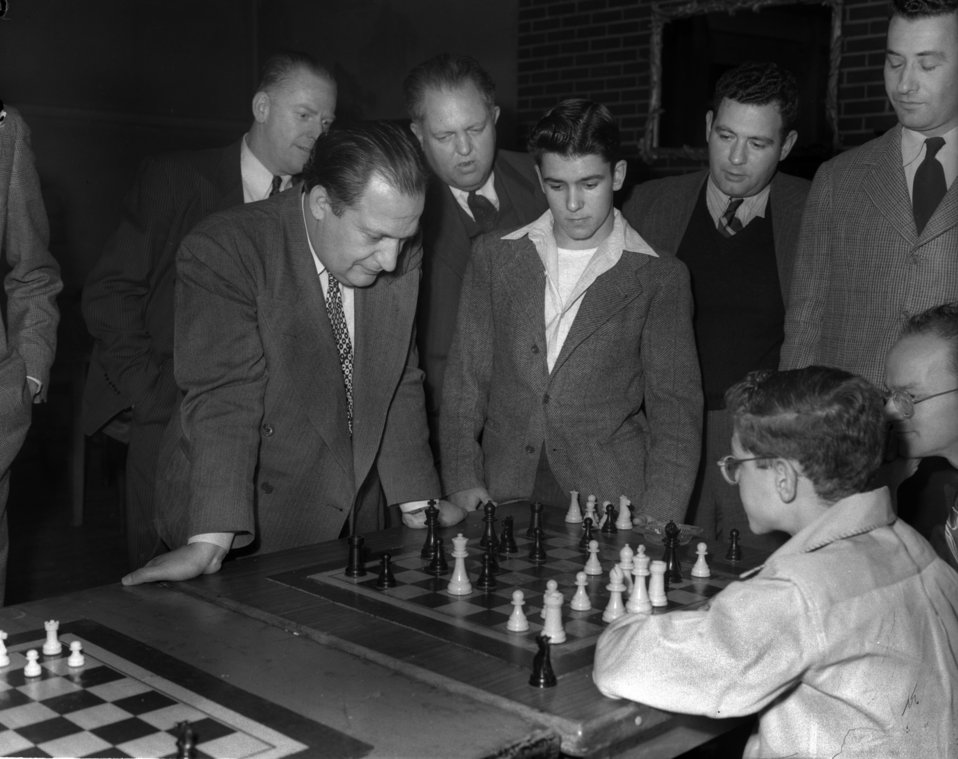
Chess expert George Koltanowski

4269 DOE photo by Ed Westcott
Oak Ridge Tennessee 1-26-1948